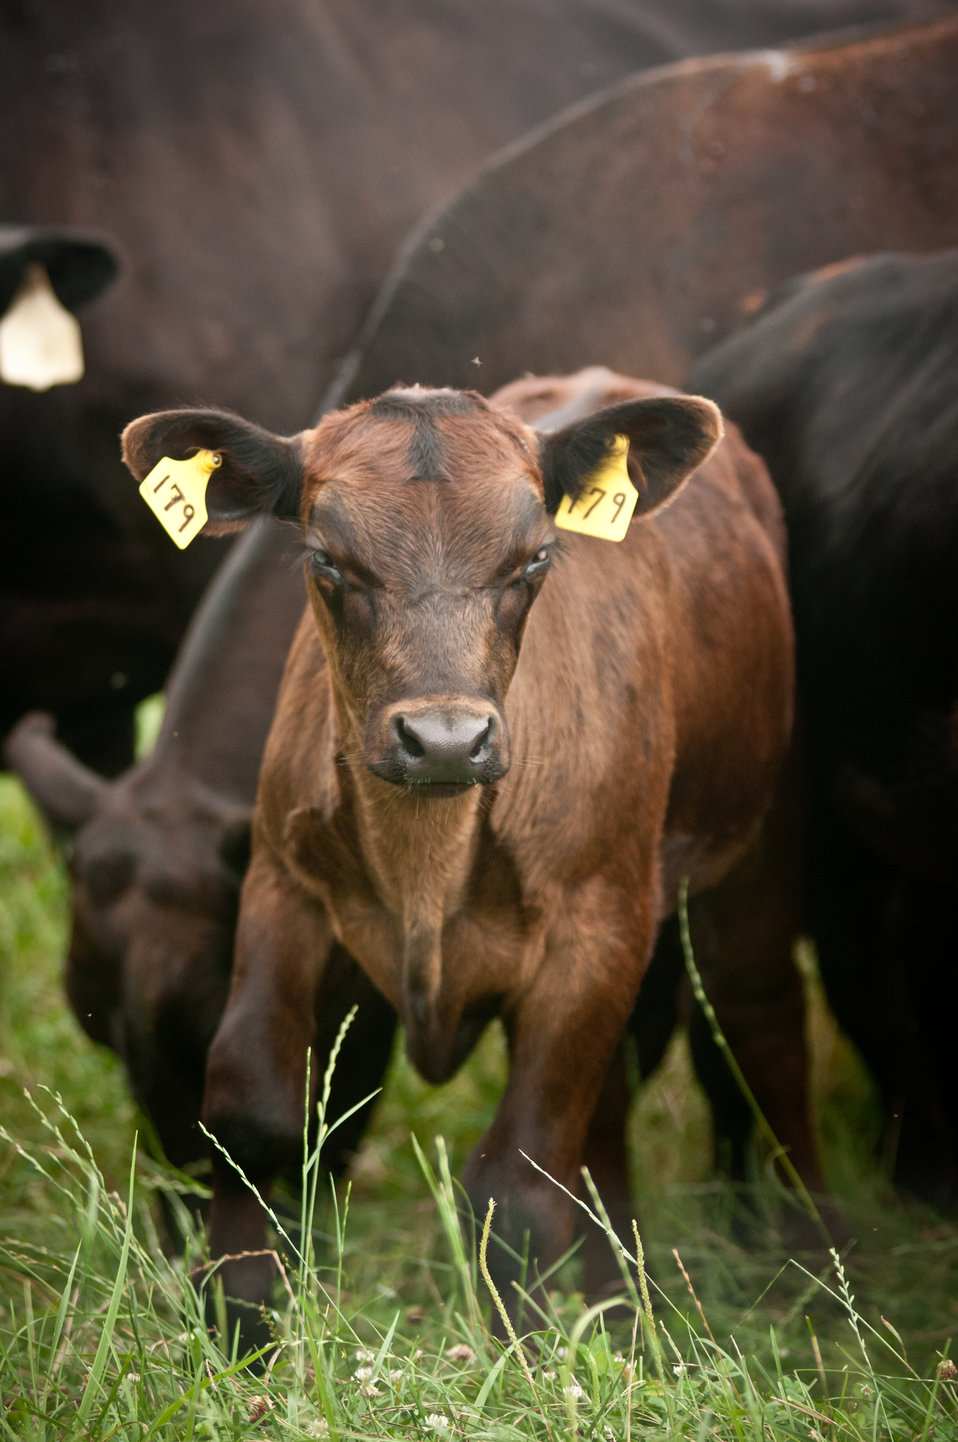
Black Angus cows and calves graze organic pastures, and for added nutrition and variety, they enjoy a daily feeding of sweet silage at Nick’s Organic Farm, owned by Nick Maravell, in Adamstown, MD on Friday, July 12, 2013. The white plastic wrapped bales of pasture grass and alfalfa have been fermenting for months to create sweet silage that stores well and can be used to feed cattle at varying amount all year long. The fermentation process sweetens the taste and increases the vitamin levels. The farm produces Black Angus beef, chicken, turkey, eggs, hay, soybeans, corn, alfalfa, orchard grass, rye; and other crops. The cattle are 100% grass-fed receiving certified organic pasture, certified organic hay (in winter), water and mineral salts mixed with sea kelp. The cattle are not fed hormones, antibiotics or animal products. Poultry feed from grain is ground from organic grain. The poultry also graze on organic pastures. The farm has conducted on-farm research with federal, state and non-profit agencies to refine organic practices. An organization such as the U.S. Department of Agriculture (USDA) Agricultural Research Service (ARS) center in Beltsville has been able to conduct research to improve organic crops and to breed and manage the cattle so that they have.